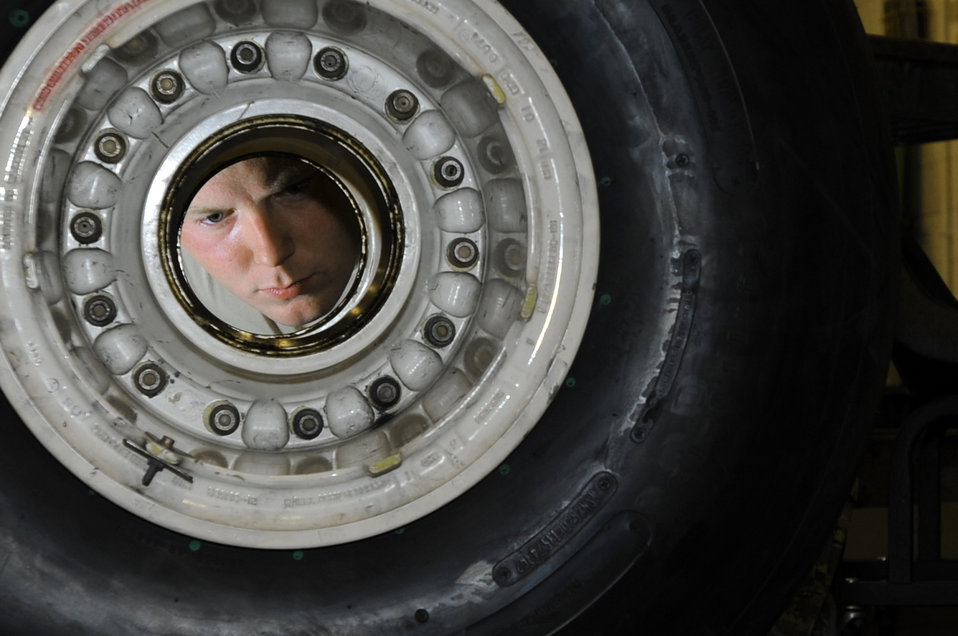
No bearing missed

Airman 1st Class Ryan Scott, a wheel and tire technician with the 509th Maintenance Squadron at Whiteman Air Force Base, Mo., inspects a B-2 Spirit nose tire Nov. 8, 2010, before it receives bearings. The wheel and tire shop inspects each piece intensively, ensuring all steps are followed.